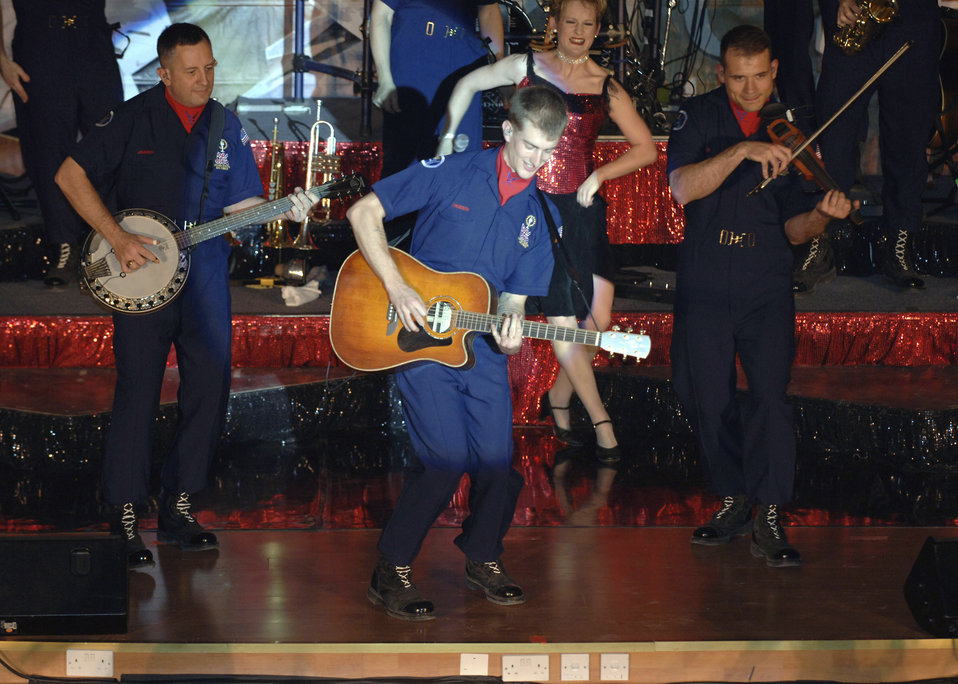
Tops in Blue boosts servicemembers' morale through song

The Tops in Blue crew performs for the members of the 386th Air Expeditionary Wing May 2, at an undisclosed location in Southwest Asia. Known as the Air Forces' Expeditionary Entertainers; the group's main mission is to perform for military personnel and their families throughout the world.